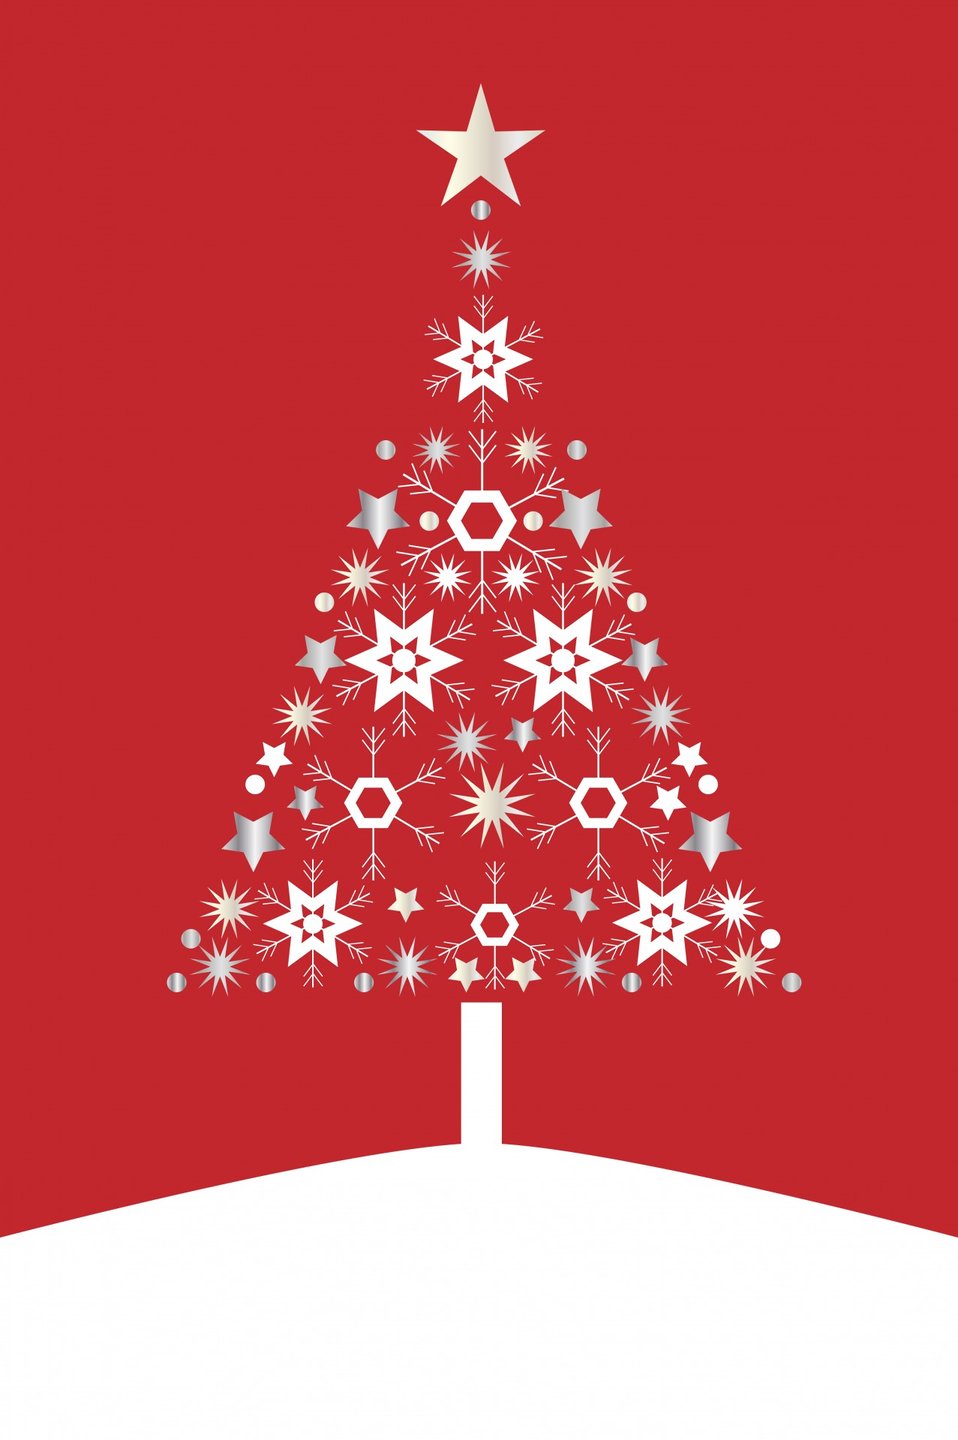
Christmas tree card modern

Modern style christmas tree card template.